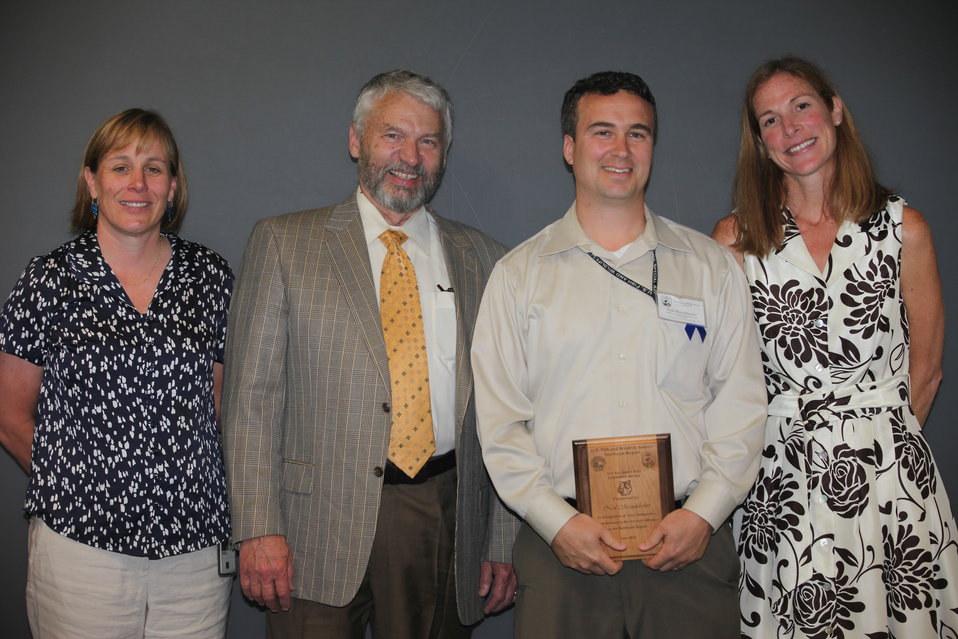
Neil Mendelsohn, Office of Law Enforcement, recieved a Special Eagle Award.
From left to right: Deputy Regional Director Deb Rocque, Deputy Director Rowan Gould, Neil Mendelsohn, and Regional Director Wendi Weber